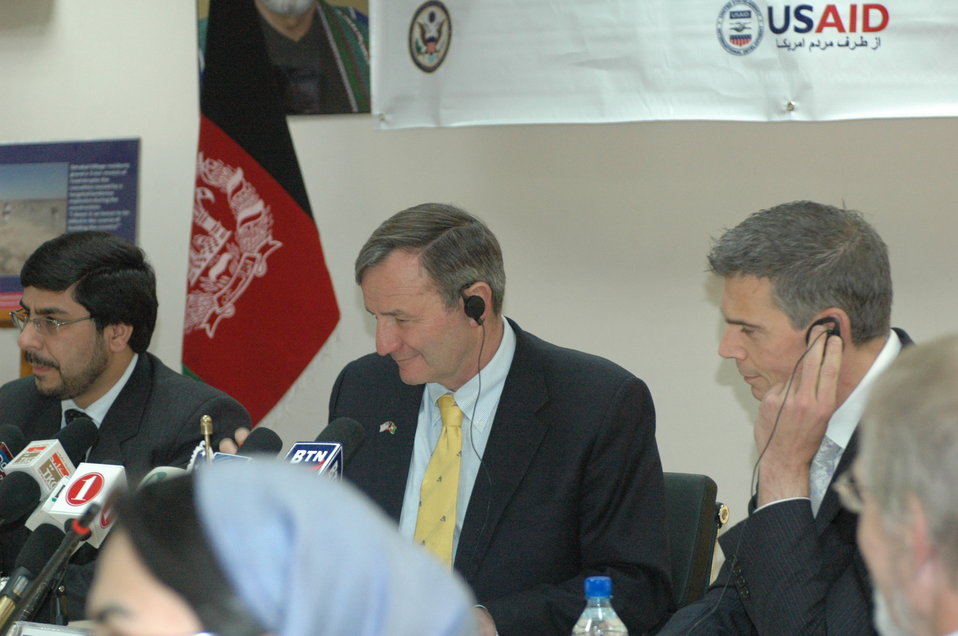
Community Based Stabilization Grants Ceremony, December 7, 2010